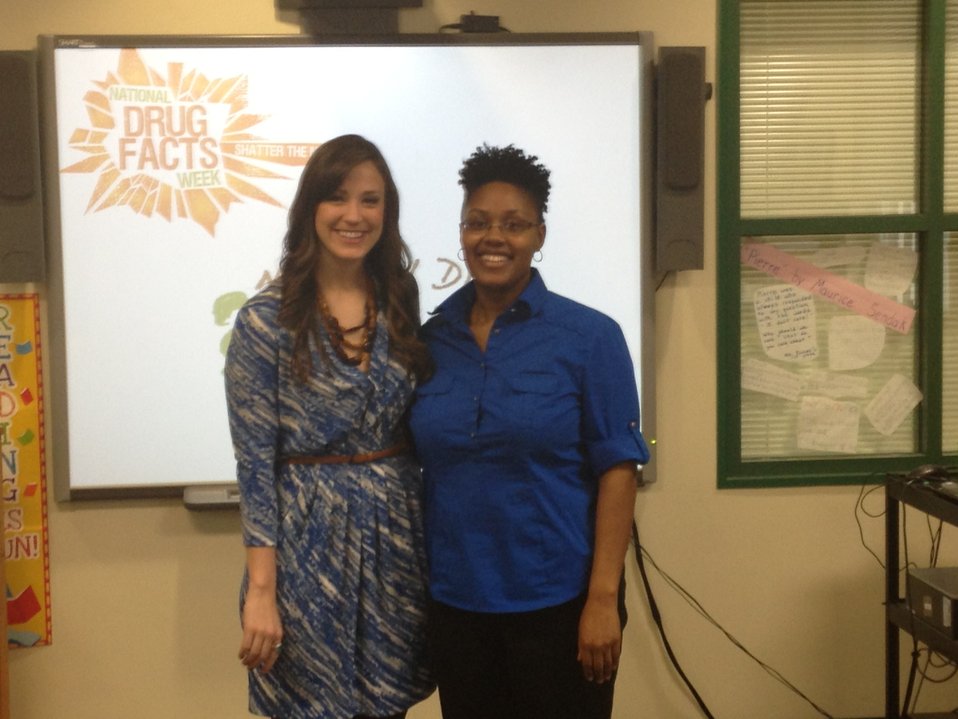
Marcella Young and Nicole Augustine

Walter G Byers School in Charlotte, NC